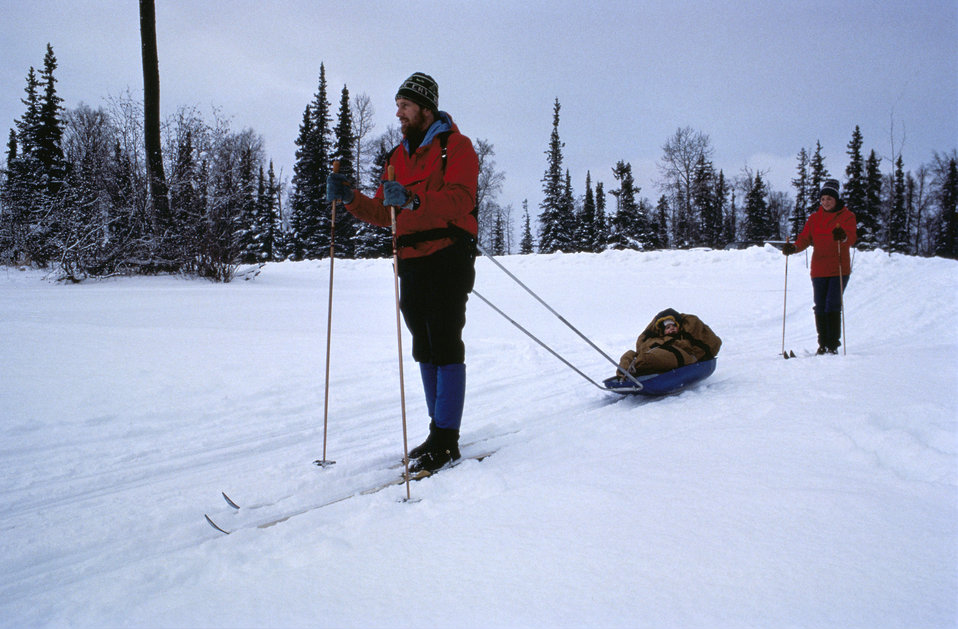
Kenai skiers

At Kenai National Wildlife Refuge, AK